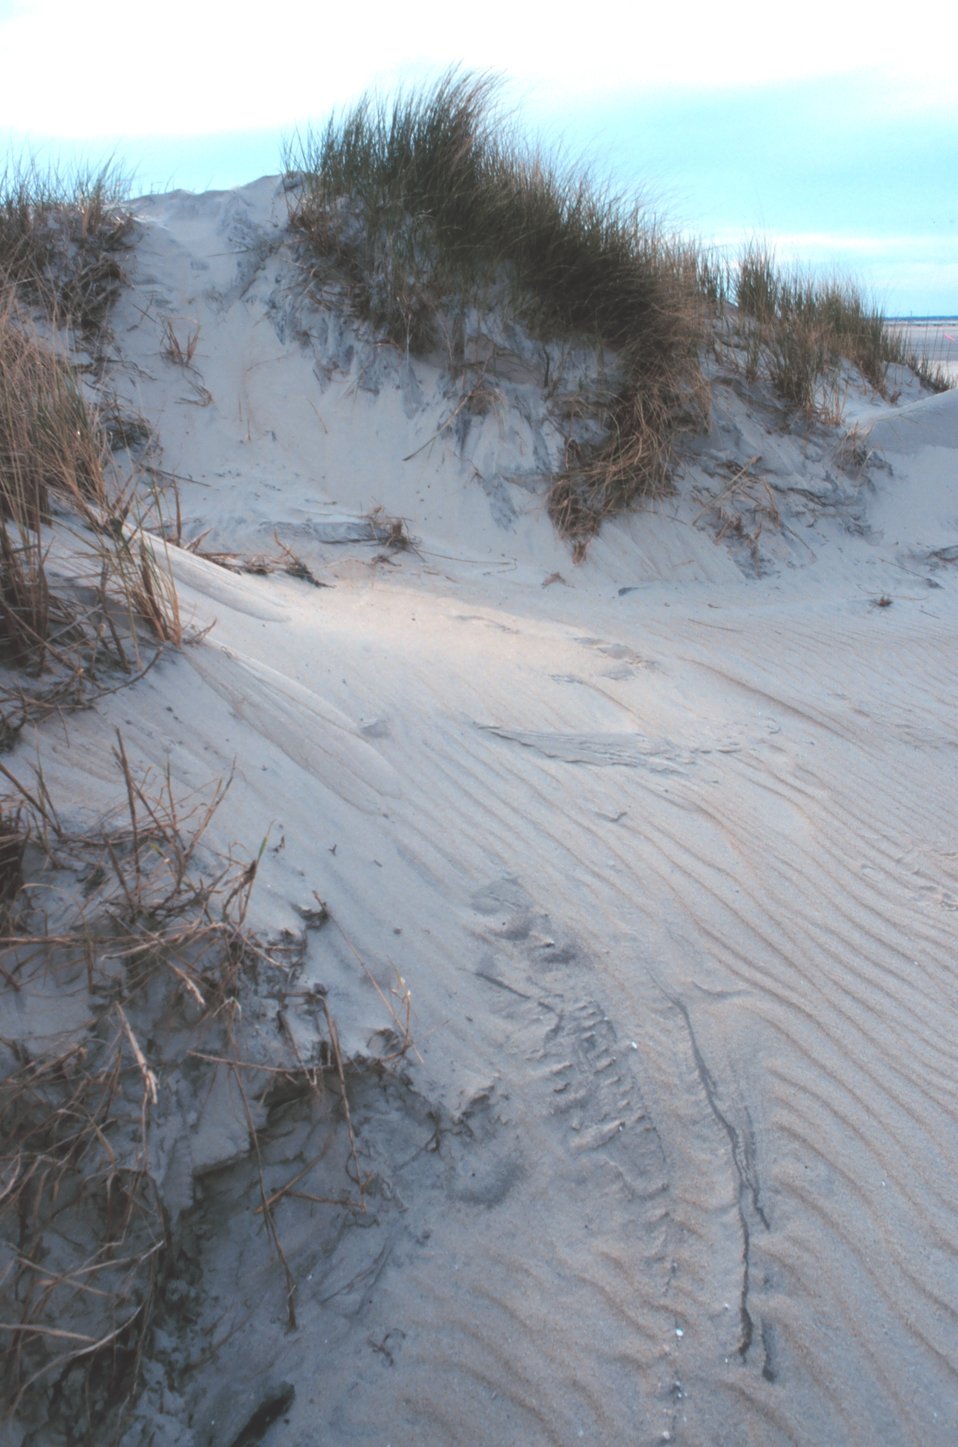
Wind-swept dunes near the abandoned Coast Guard Station